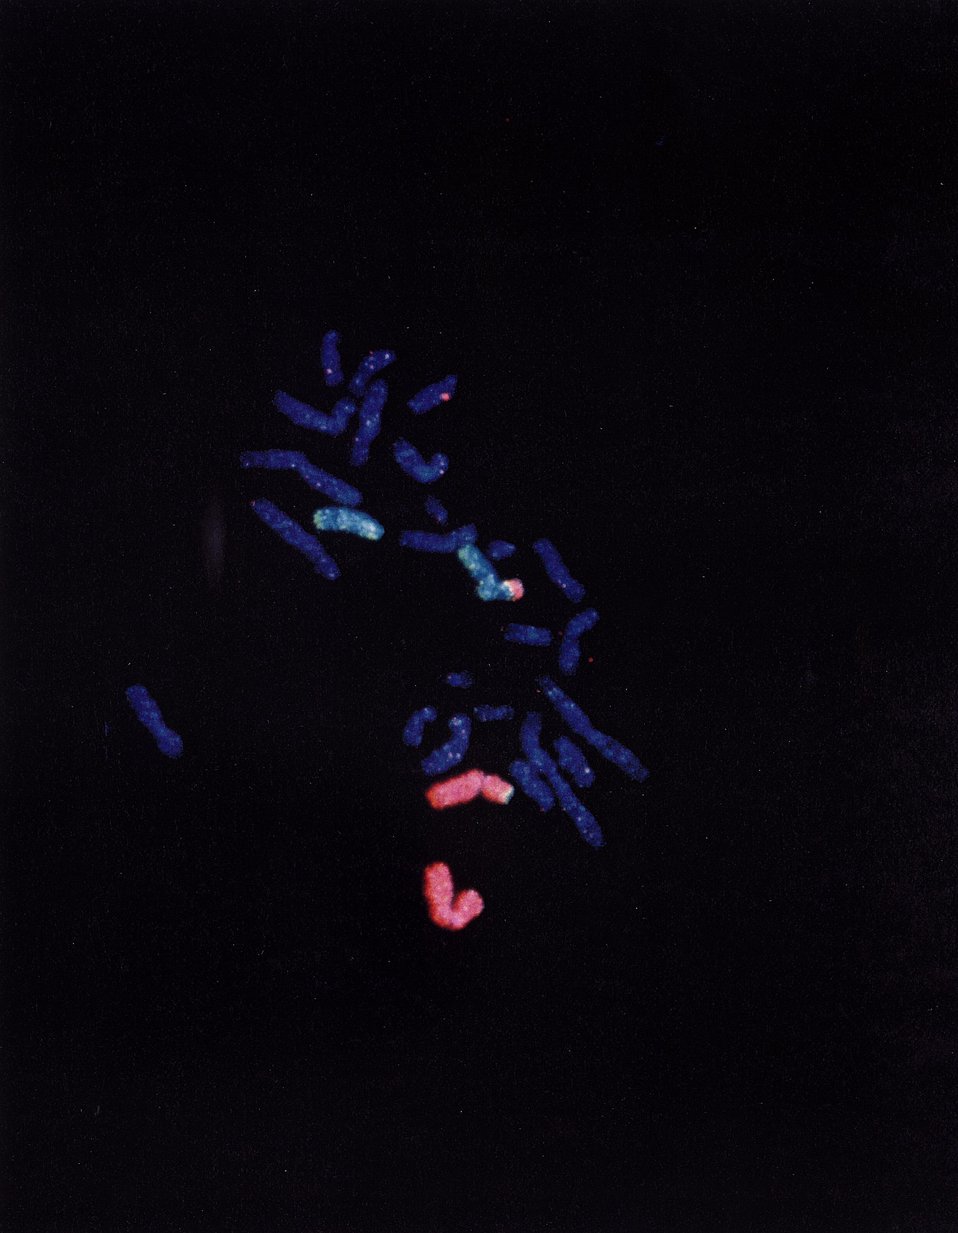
New Technology Identifies Chromosome Abnormalities. Developed at LLNL, whole chromosome painting permits significantly faster and more accurate identification of the human chromosome abnormalities frequently present in cancer.